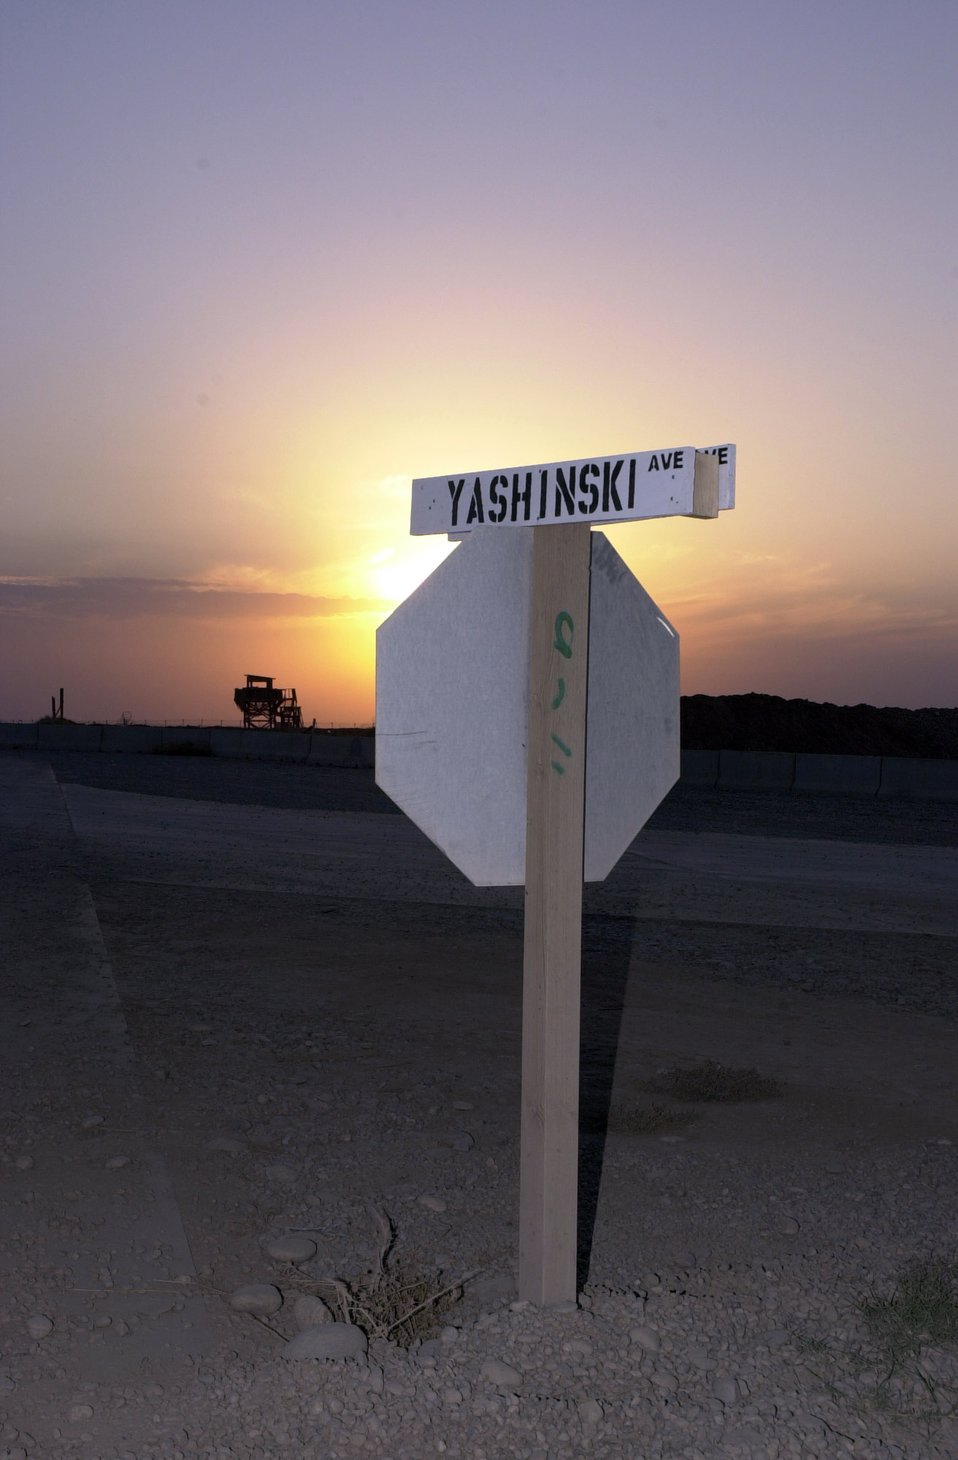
The making of a memorial

KIRKUK AIR BASE, Iraq (AFPN) -- A street sign named for Army Sgt. Michael E. Yaschinski stands at an intersection. Yaschinski Ave. is one of the streets named to after fallen Soldiers and Airmen of Kirkuk Regional Air Base and Forward Operating Base Warrior.